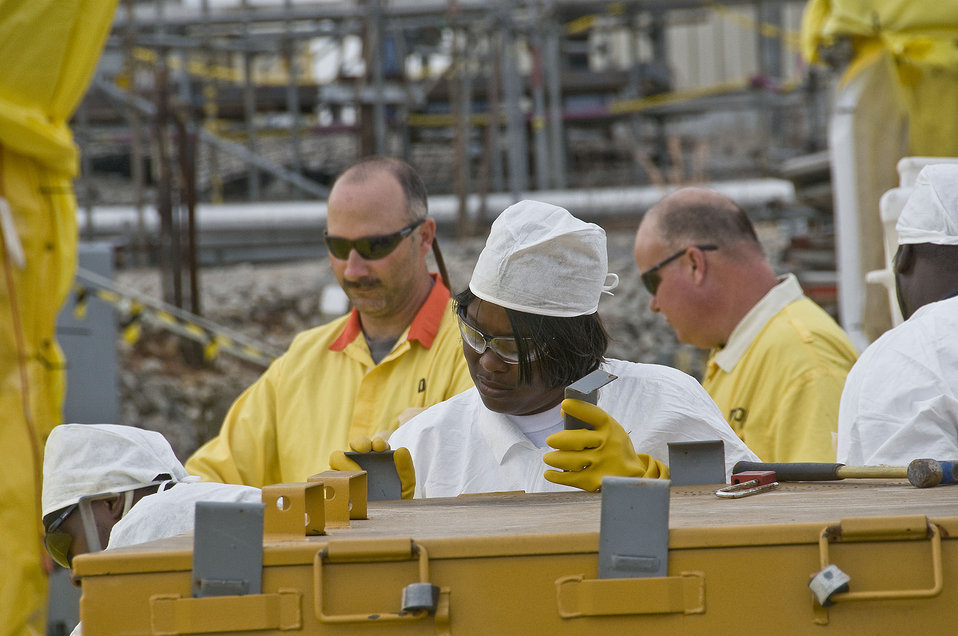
Savannah River Site Enters Final Recovery Act Year with Many Accomplishments

Working on deployment of infrastructure upgrades at Waste Tank 13 in the H Tank Farm at SRS.